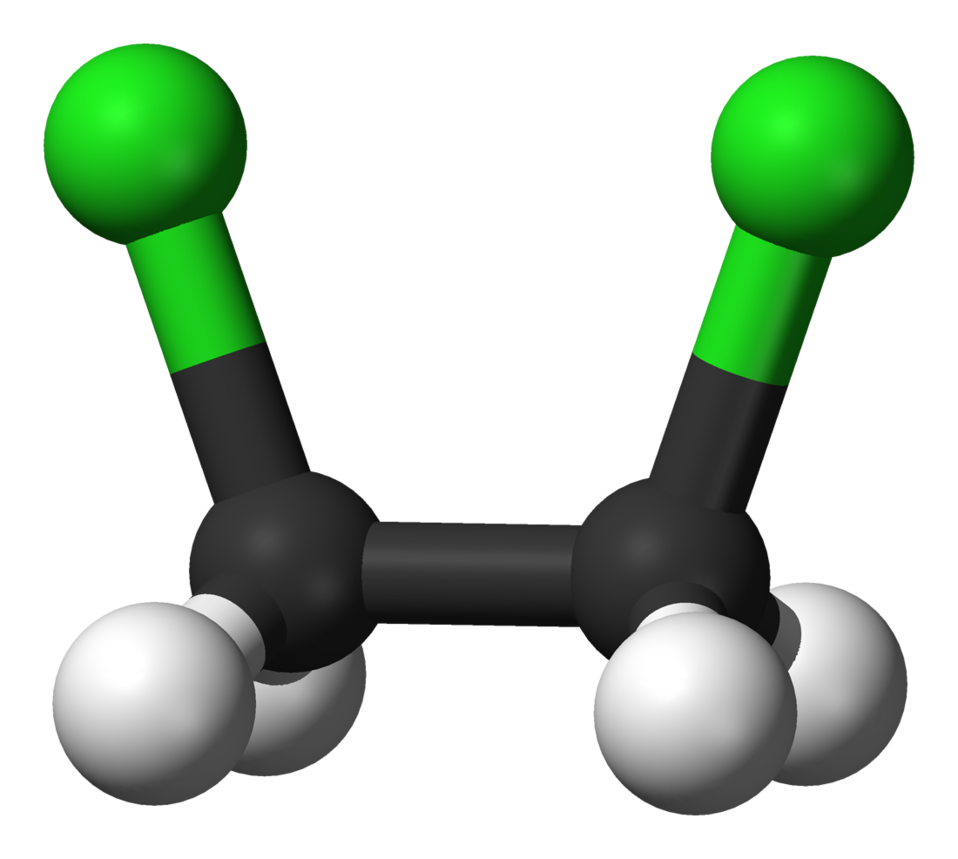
1,2-dichloroethane-eclipsed-side-3D-balls